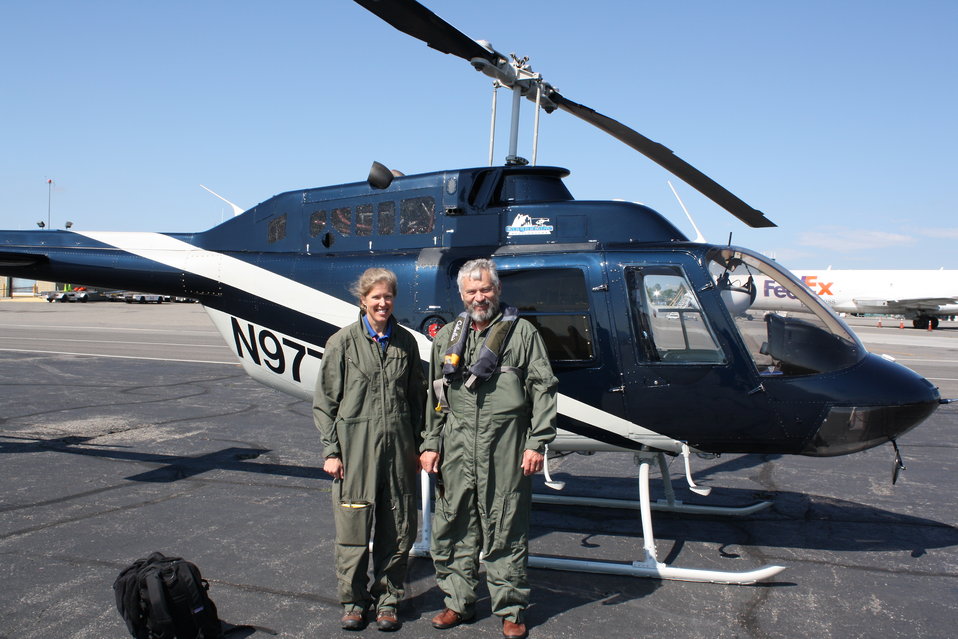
Service's Deputy Director Before Aerial Wildlife Survey

Deputy Branch Direcor for Wildlife Operations, Karen Nelson, poses for a photo with U.S. Fish and Wildlife Service Deputy Director, Rowan Gould, before both surveyed the Yellowstone River and the effects of the Silvertip Pipeline Oil Spill. Nelson surveyed impacted areas for affected wildlife, while Gould viewed the response effort from above.